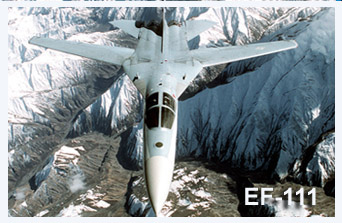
EF-111

An EF-111 Raven flies over the no-fly zone of northern Iraq. The first operational EF-111A was delivered to Mountain Home AFB, Idaho, in November.